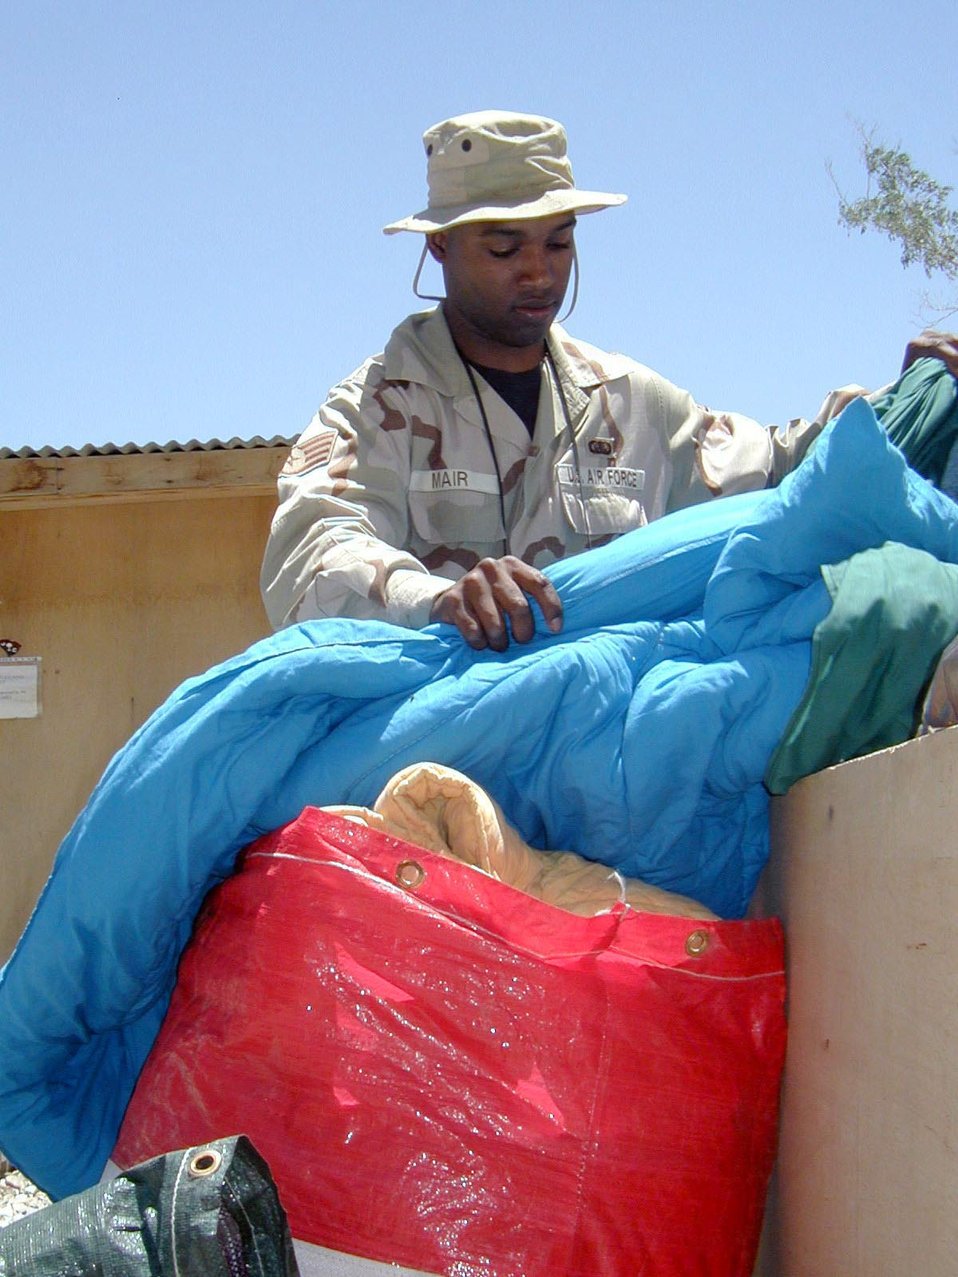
Laundry service

OPERATION ENDURING FREEDOM -- Staff Sgt. Damian Mair sorts bed comforters before taking them to laundry services on Bagram Air Base, Afghanistan. Mair is assigned to the base's 455th Expeditionary Operations Group's services unit. The sergeant and his co-workers are getting ready for incoming people as Air and Space Expeditionary Forces 1 and 2 prepare to rotate into the area of responsibility.